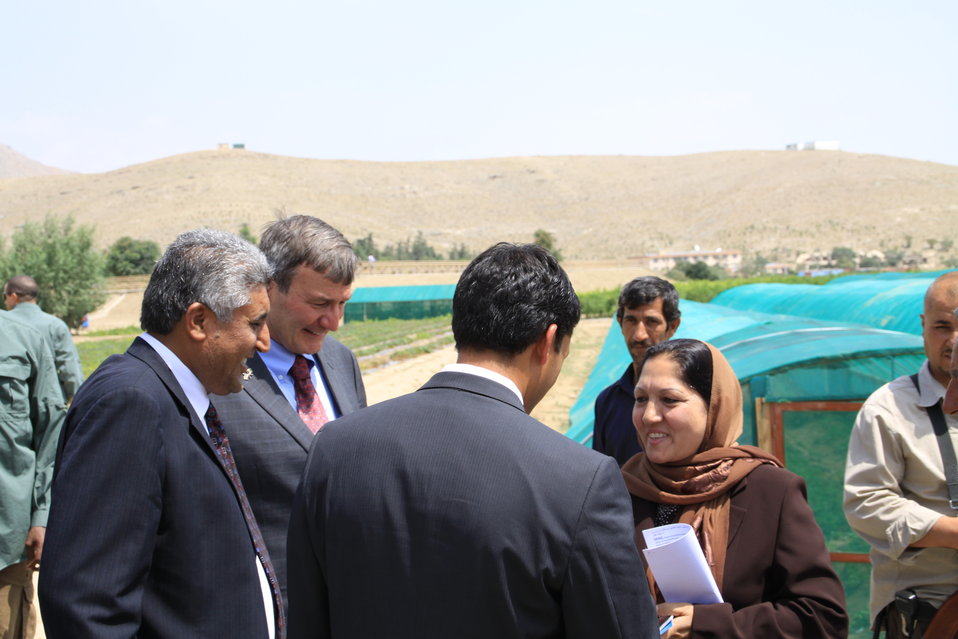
Badam Bagh Farm